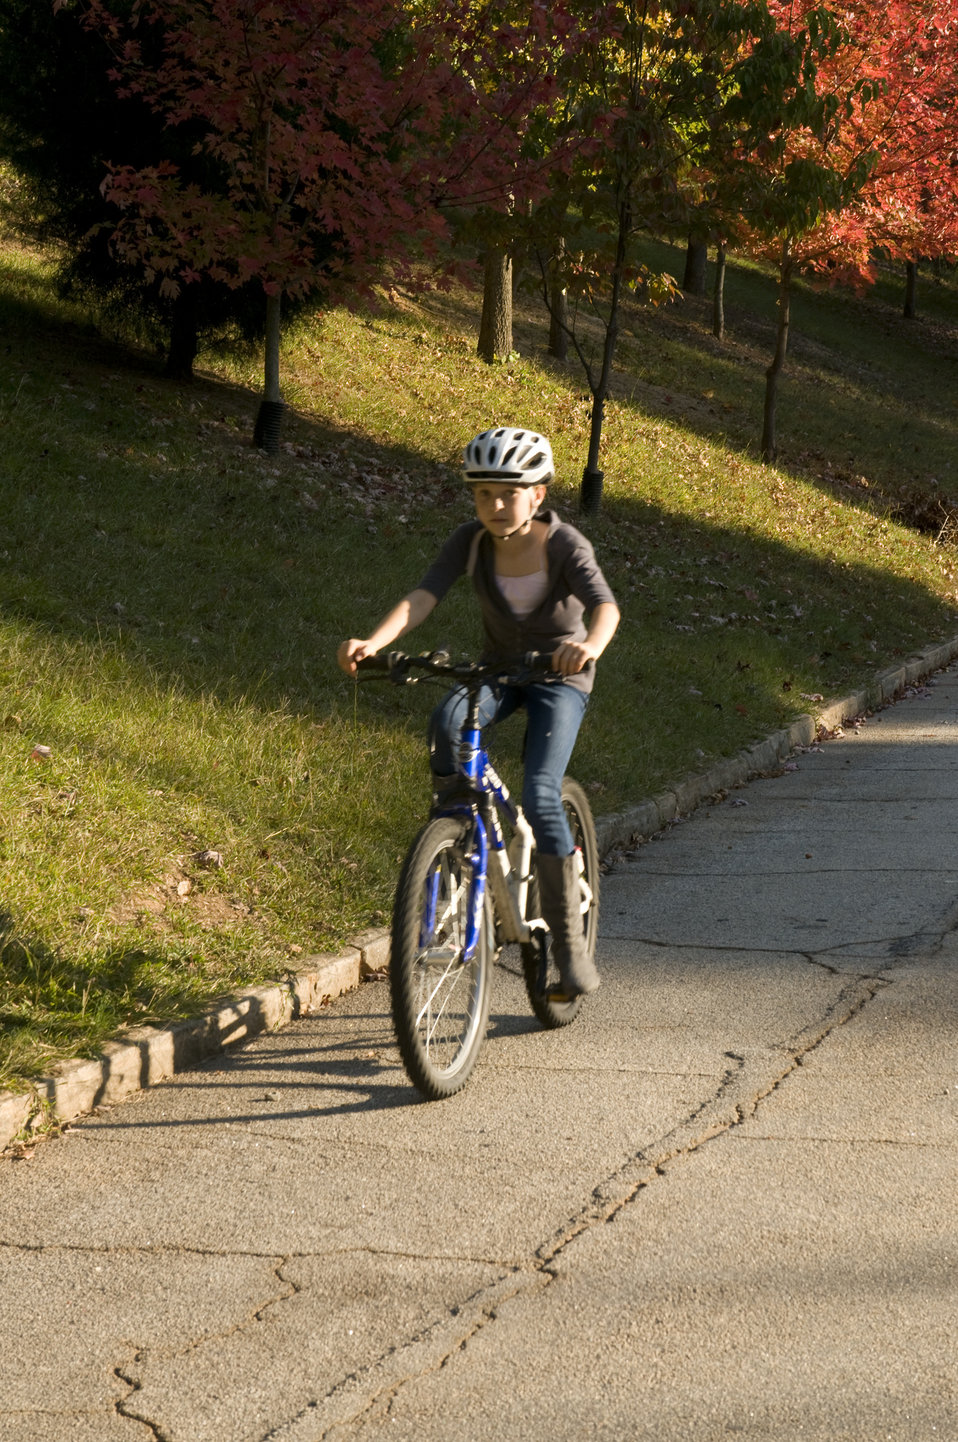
This image depicts a young girl who was riding her bicycle on a bright Georgian afternoon. She's been equipped with an aerodynamic safety helmet, and wore snug-fitting pants, which are both a must in order to afford appropriate protection for any bike rider form head injury, and from the elements, respectively. However, bright-colored clothing would also have been appropriate, for it would have made this girl more visible to oncoming traffic.